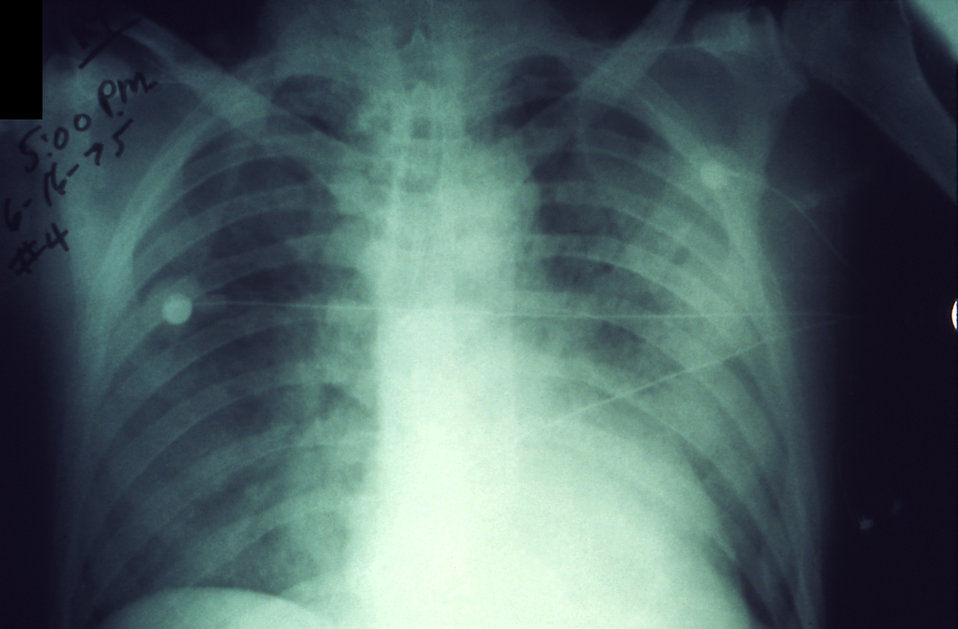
This anteroposterior x-ray reveals a bilaterally progressive plague infection involving both lung fields.